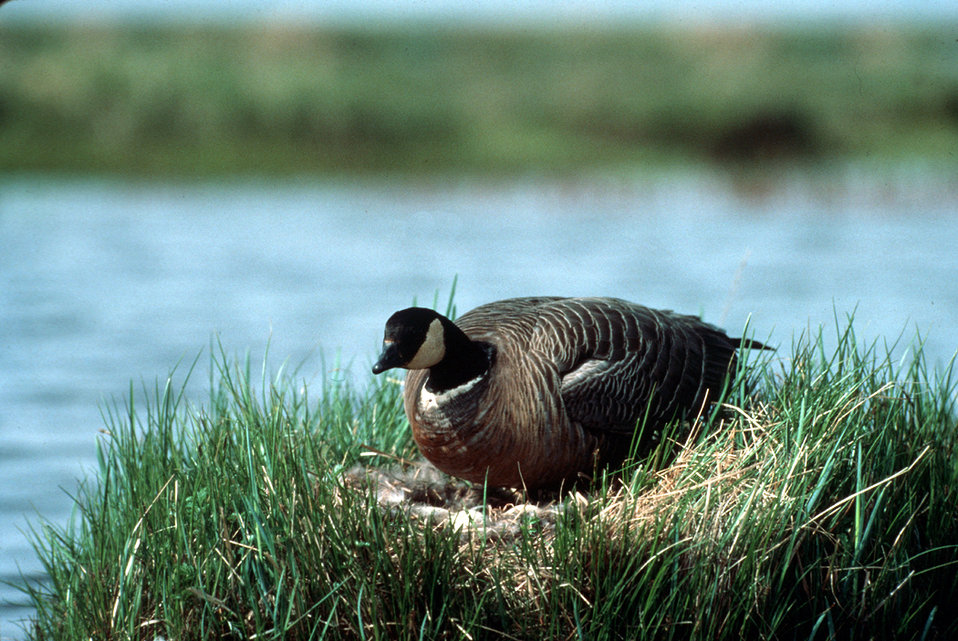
Cackling Canada goose on nest.